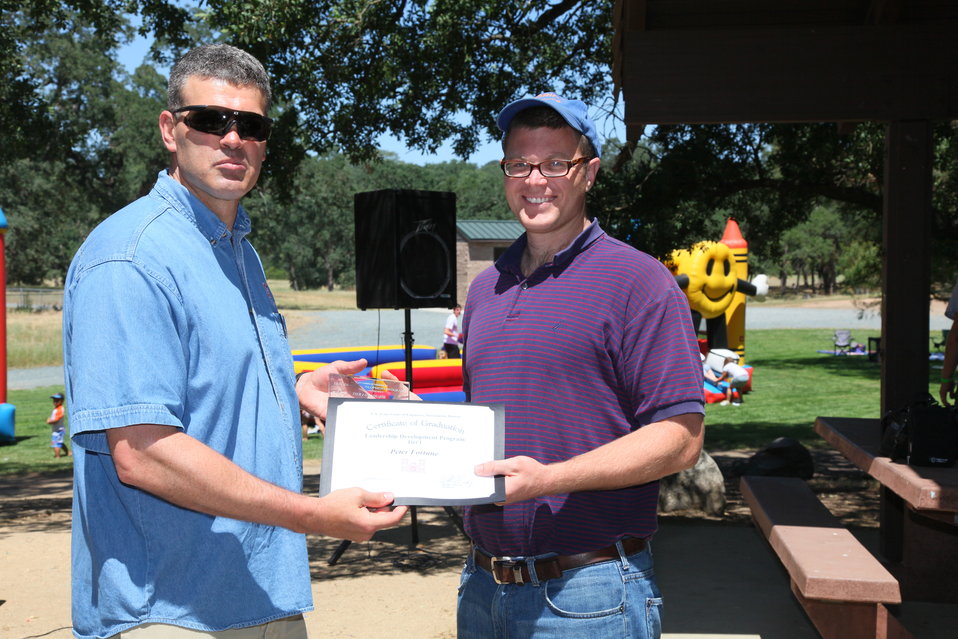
2011 Annual Picnic